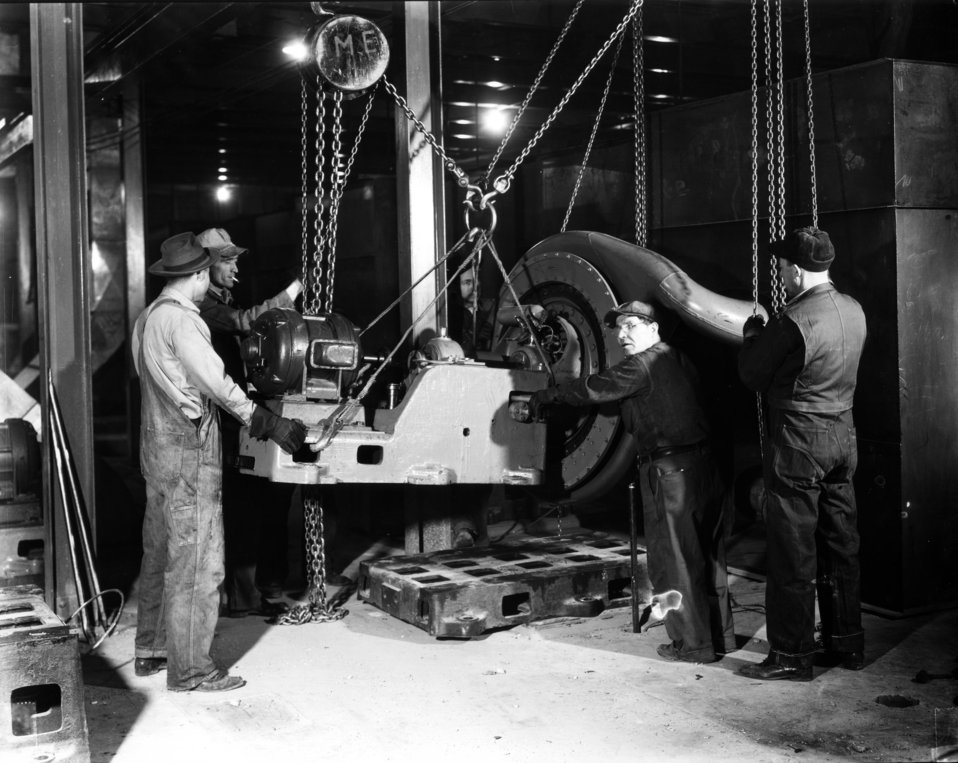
K-25 at Oak Ridge